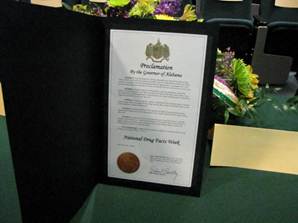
Governor’s proclamation

Drug Education Council’s NDFW summit, Thursday, January 31, 2013 in Mobile, Alabama. State and local officials held a prescription drug abuse summit to heighten awareness.